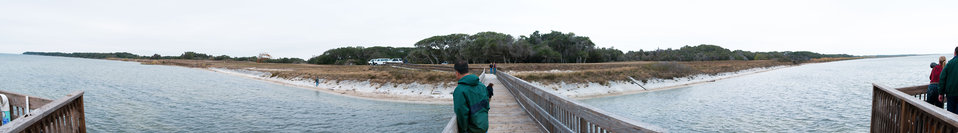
(Download original size for best viewing, wider panorama available upon request) Virtual panorama from the Aransas National Wildlife Refuge fishing pier in Austwell, TX, and San Antonio Bay, TX, on December 16, 2011. Four rare and endangered Whooping Cranes (white birds) seen in the center of the tidal marsh. This is a typical coastal prairie shoreline, Phragmites reed grass stabilizes the shore while live oak provides deep root stabilization and a windbreak from off shore winds.
State Conservationist Salvador Salinas commented on the USDA-NRCS Gulf of Mexico Initiative (GoMI) during a press conference, about improving water quality, habitat, and the health of the Gulf ecosystem. “Launching this initiative is a top priority for NRCS in Texas because the Gulf of Mexico is one of our state’s premier natural resources. It provides vital habitat for wildlife, and creates jobs in industries that depend upon them. The health of this resource is essential to Texas as well as to the nation,” said Salvador Salinas. The Texas initiative focuses on three watersheds in Refugio, Calhoun, Victoria and Aransas counties and ultimately the Gulf of Mexico.
“What is really compelling about GoMI and other similar conservation efforts is that they prove that Texas farmers and ranchers not only feed and clothe us and power our vehicles, but they can also help protect and restore our rivers and provide more habitat for wildlife,” stated Salinas. “That’s why it is important that this conservation project is not about taking productive farm land out of production. This is a working lands initiative, so that not only are we helping to restore the health of the Gulf, but we’re also helping to sustain and enhance the productivity of the Gulf’s farms and ranches.”
Nationally, USDA-NRCS is dedicating up to $50 million over three years to this effort.
NRCS will continue to provide proven technical expertise and that of their partners. The anticipated result is improved water quality, stream flows and wildlife habitat. USDA photo illustration by Lance Cheung.